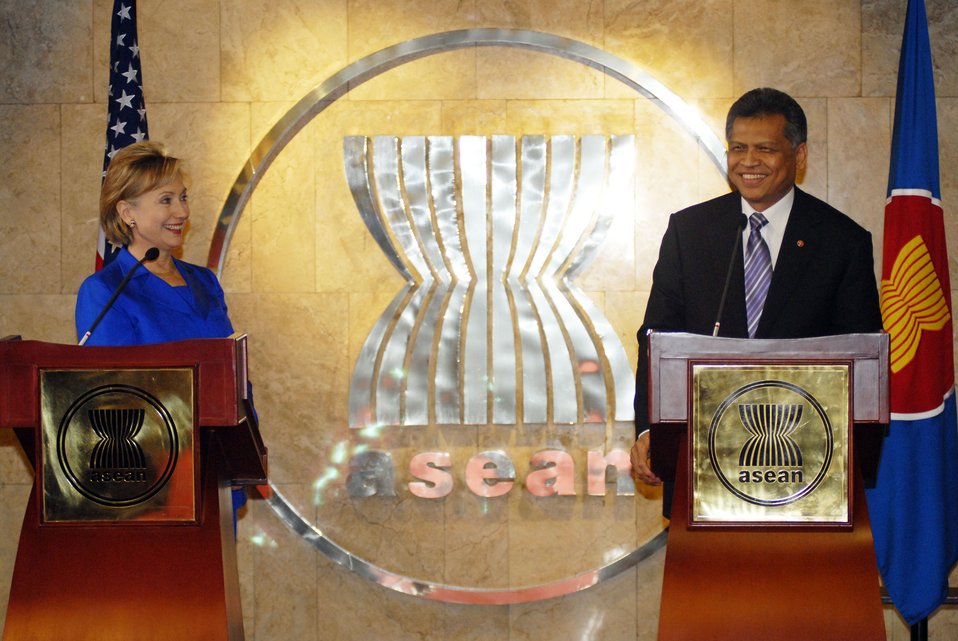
Secretary Clinton and ASEAN Secretary General Pitsuwan

Secretary Clinton with ASEAN Secretary General, Dr. Surin Pitsuwan in Jakarta, Indonesia February 19, 2009.